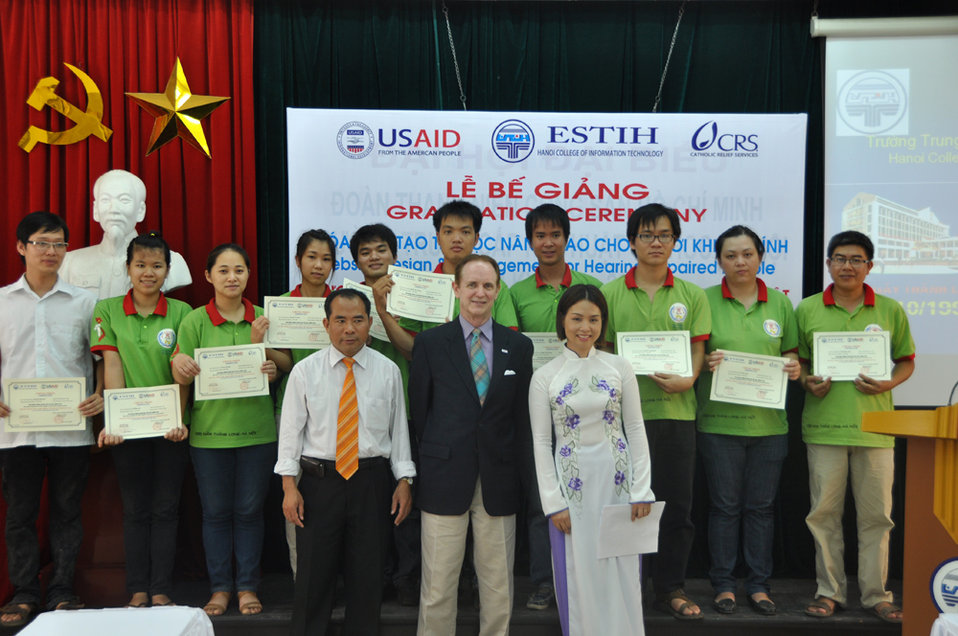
USAID Mission Director Francis Donovan participate in graduation of IT students in Hanoi on June 22, 2011.